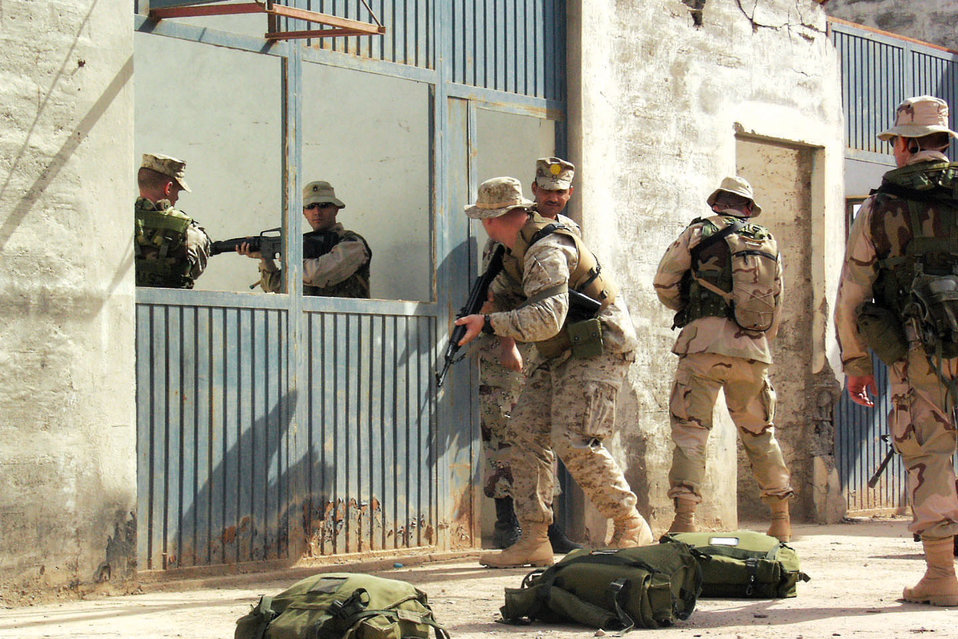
Airmen help train Iraqi soldiers

KIRKUSH MILITARY TRAINING BASE, Iraq -- American professional military education instructors train Iraqi soldiers how to properly enter a building.